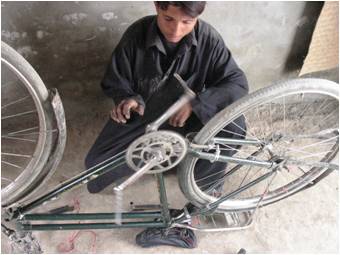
Repairing Bikes, Fixing Futures

An estimated 68 percent of the Afghan population is below 25 years of age, and most lack educational and employment opportunities. Faced with these challenges, many Afghan youth turn to the insurgency as a means of supporting their families. Therefore, providing vocational training and economic opportunities for young men is one of the keys to achieving stability. As part of this effort, USAID is helping young men in Khost Province learn to repair one of the area’s primary means of transportation: the bicycle.
Supported by a grant from USAID’s Local Governance and Community Development (LGCD) project, the National Youth Council of Khost recently concluded a bicycle maintenance vocational skills course for 60 unemployed young men in Khost City. The trainees learned to fit and fix an entire bicycle, and received advice on leveraging these practical skills into a profitable small business.
The two-month training ended in late February 2010, and graduates are putting their new skills to use. “We have five bicycles in our home and before, we were forced to bring them to the city for repair,” said a trainee named Nimatullah. “Now I am able to repair the bicycles in my own home. The village where I live has 30 homes and most of the villagers have bicycles. All the villagers now bring their bicycles to me for repairs.” Ashraf Khan, another participant who has already opened his own workshop, proudly reports earning a steady income that he believes will continue to increase.
Faced with limited economic opportunity, Afghan youth often turn to criminal activities to make a living. This trend can change if they are offered the chance to learn a vocational skill and empowered to succeed in the private sector. The Afghan Government’s National Youth Program aims to increase young Afghans’ participation in the stabilization and development of their country, while promoting non-formal educational opportunities to develop skills that can lead to better quality of life and livelihood opportunities.
As one of USAID’s stabilization programs, LGCD works to engage communities in unstable areas to take an active role in their own security, and addresses priority grievances of at-risk populations through integrated community development projects.